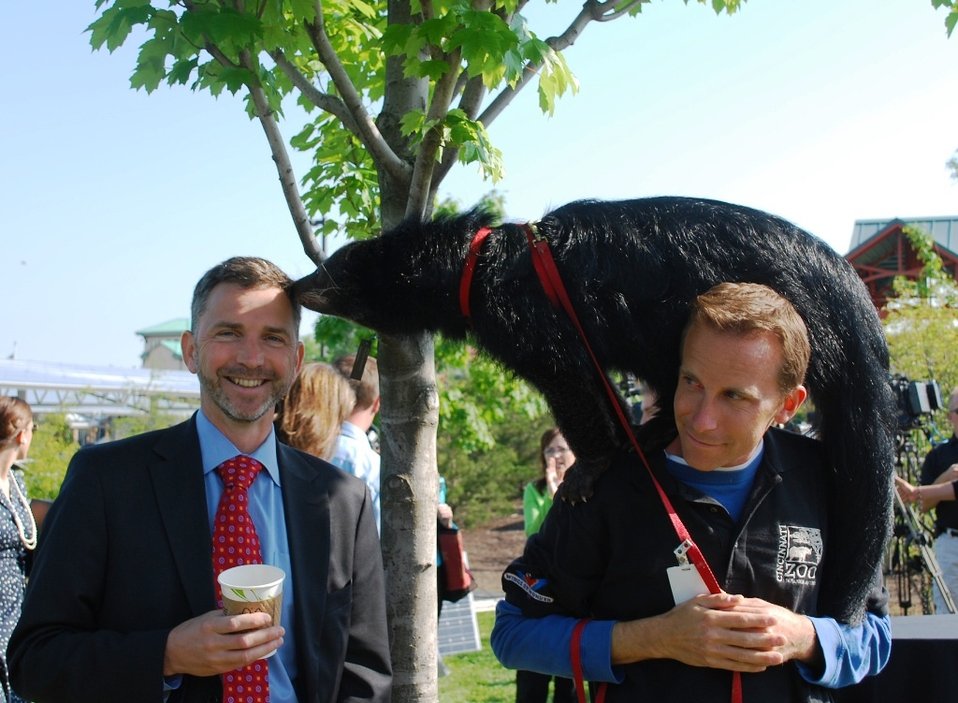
Assistant Secretary Tangherlini at the Cincinnati Zoo

An intimate moment between Assistant Secretary Dan Tangherlini and a bearcat, the University of Cincinnati's mascot, during a dedication of the nation’s largest publicly accessible urban solar array, making the Cincinnati Zoo the self-proclaimed “Greenest Zoo in America.”